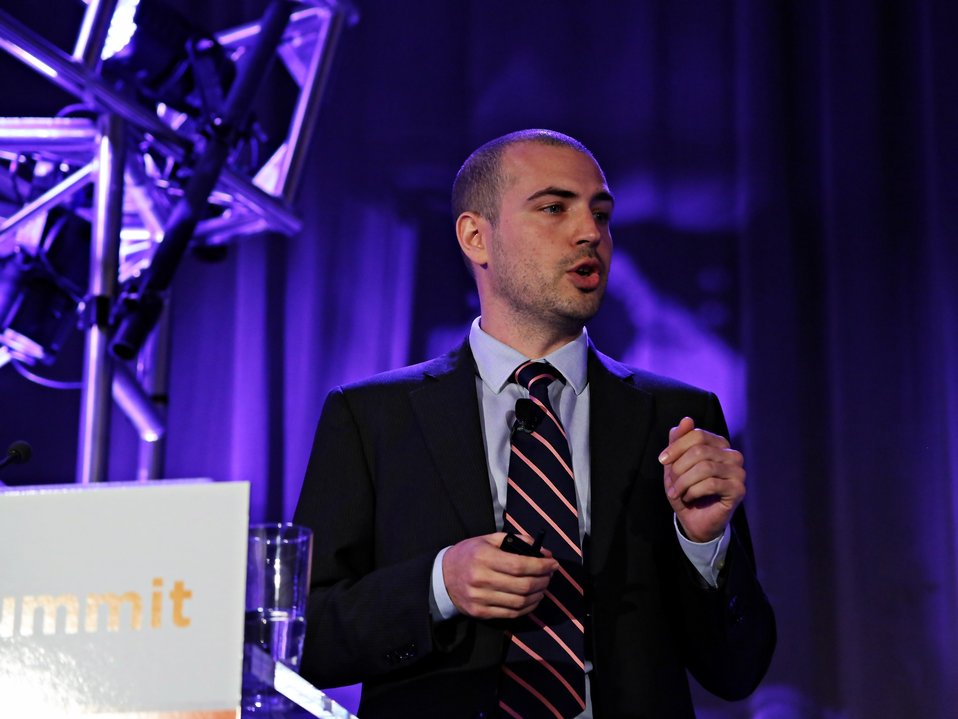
Day 2 Keynote Session 20

Mosaic's Founder and President Billy Parish, gives a keynote about the evolution of solar financing.